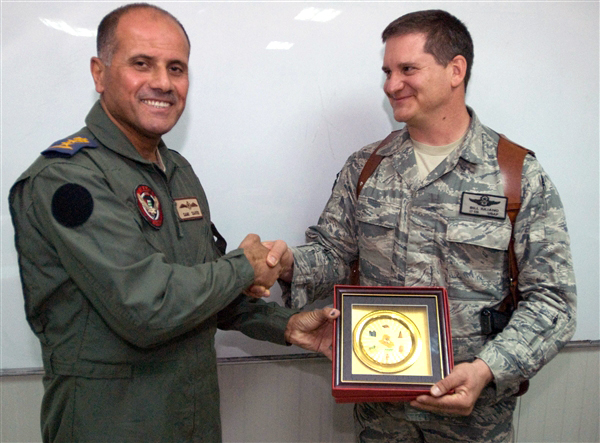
One-time enemies become brothers in Iraq

Iraqi air force Col. Sami shakes hands with Lt. Col. Bill Iuliano during a brief ceremony Sept. 14, 2009, at Contingency Operating Base Basra, Iraq. The two officers flew on opposite sides of the Persian Gulf War in 1991, but have worked together in Operation Iraqi Freedom to strengthen the Iraqi air force.